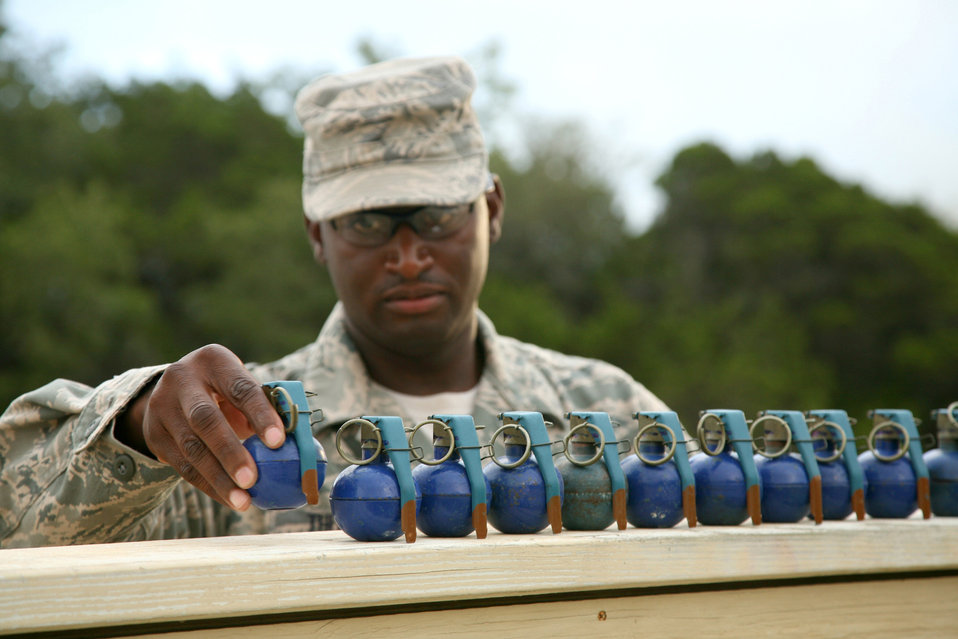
Training with a bang!

Tech. Sgt. Eric Thomas, an instructor with the 343rd Training Squadron, preps M-67 training grenades June 18 at Camp Bullis, Texas. Students practice throwing the simulated grenades to hone their technique as instructors evaluate before moving on to live ordnance.